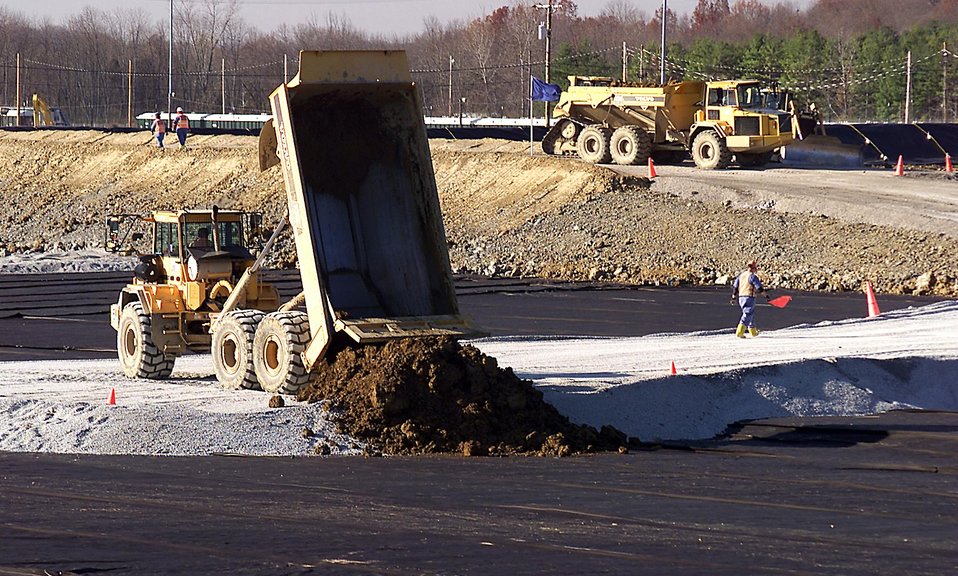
DISPOSAL CELL OPENED FOR DISPOSING OF CONTAMINATED SOIL AND DEBRIS AT DOE'S FERNALD ENVIRONMENTAL MANAGEMENT PROJECT.

THE FERNALD PLAN FOR DISPOSING OF LOW-LEVEL WASTE INCLUDES ON A SEVEN-CELL, 70 ACRE ON-SITE DISPOSAL FACILITY WITH LEACHATE COLLECTION AND WASTE WATER TREATMENT SYSTEMS AND FIVE FOOT THICK EARTHEN AND SYNTHETIC LINERS FOR THE CELLS. CREWS PLACE SOIL AND DEMOLITION DEBRIS INTO THE FACILITY AT A RATE OF 200 TRUCKLOADS A DAY. WHEN COMPLETE, IT IS ANTICIPATED THAT THE DISPOSAL FACILITY AND ITS BUFFER AREA WILL ENCOMPASS 130 ACRES.